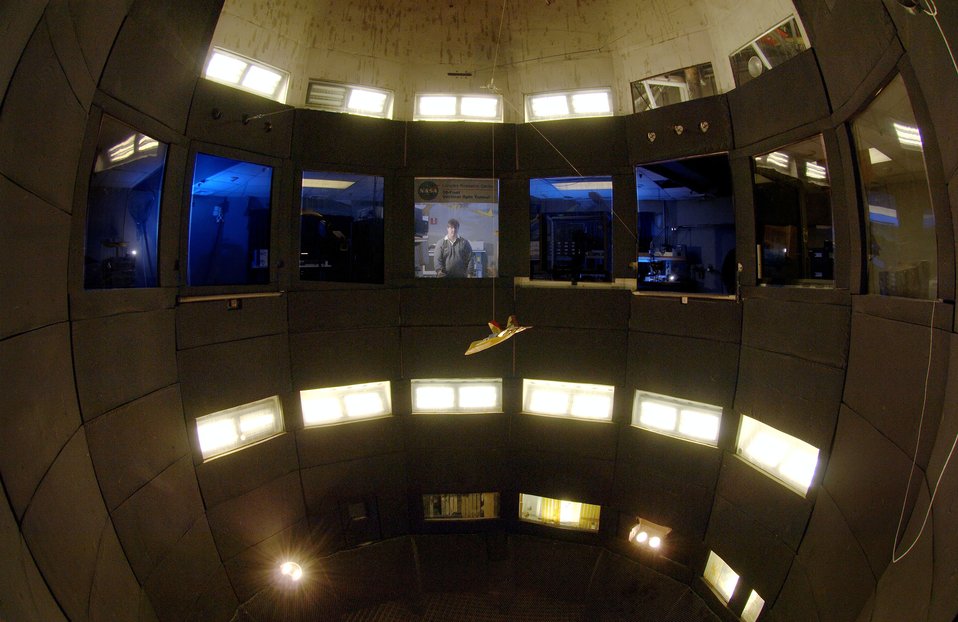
Into space

LANGLEY AIR FORCE BASE, Va. (AFPN) -- Steven Riddick tests an F-22A Raptor model in NASA's 20-foot vertical spin tunnel here. Data gathered from these tests can determine how an aircraft or spacecraft would react to various atmospheric conditions. Mr. Riddick is an aerospace technology engineer for the National Aeronautics and Space Administration.